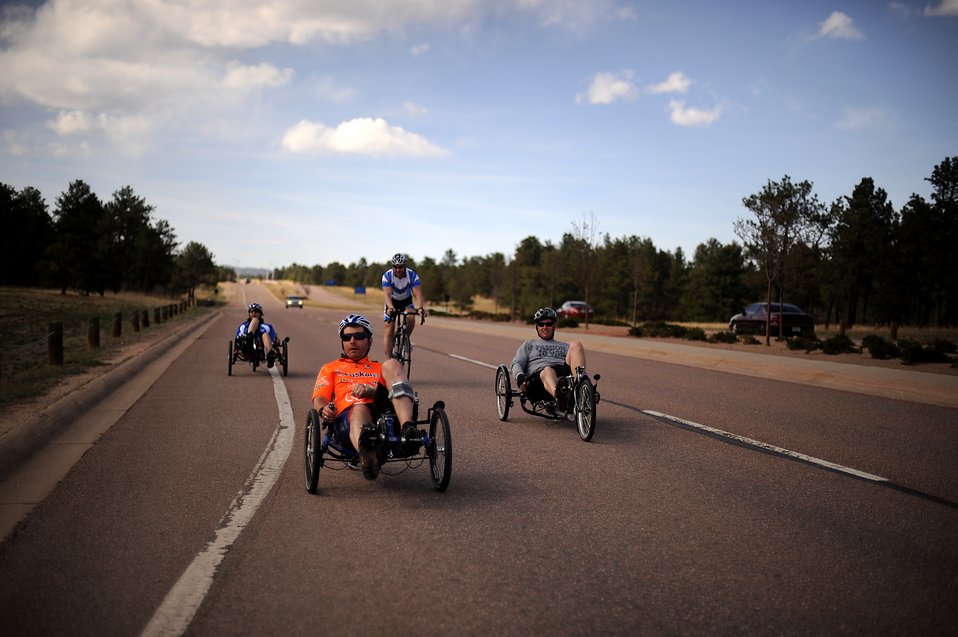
Warrior Games selection camp concludes for AF

Capt. Anthony Simone (front) and Ramina Oraha, a retired senior airman (back left) train with their coaches on their cycles March 29, 2012, while at the Air Force Academy, Colo., during the Air Force Wounded Warrior Games selection camp.